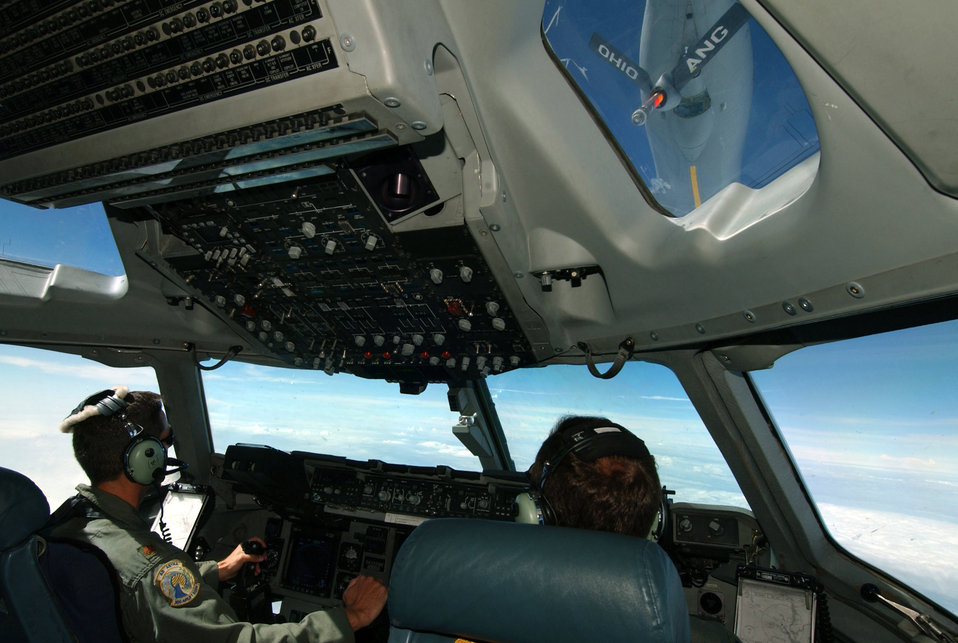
Gas-n-go

OVER THE EAST COAST -- Lt. Col. Tom Clayton and Maj. Dave Deames line up a C-17 Globemaster to refuel with a KC-135 Stratotaker from the Ohio Air National Guard’s 121st Air Refueling Wing. The aircrew is assigned to the 300th Air Lift Squadron at Charleston Air Force Base, S.C.